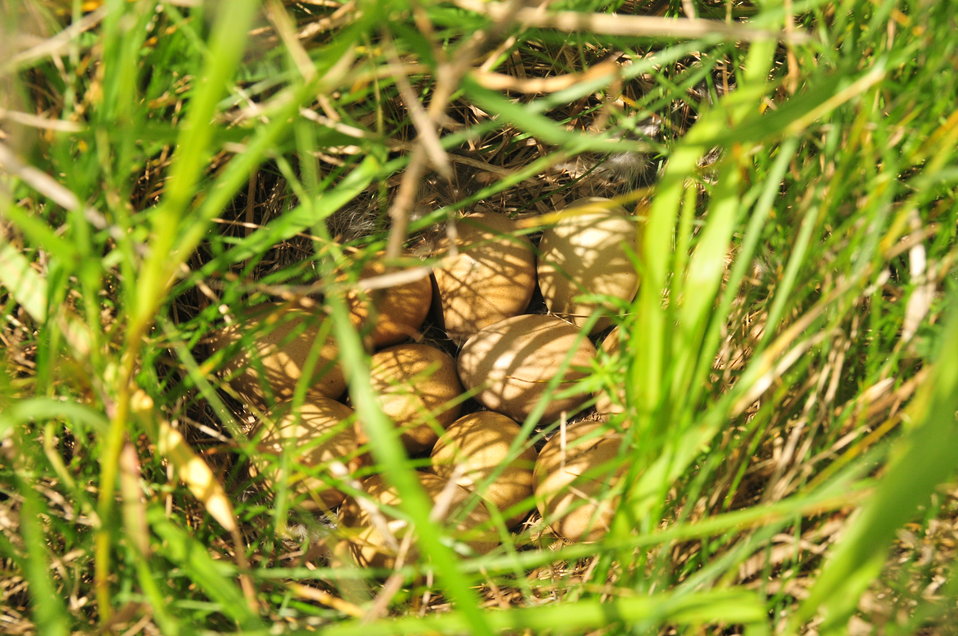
Sharp-tailed Grouse Nest

A sharp-tailed grouse nest in South Dakota prairie.